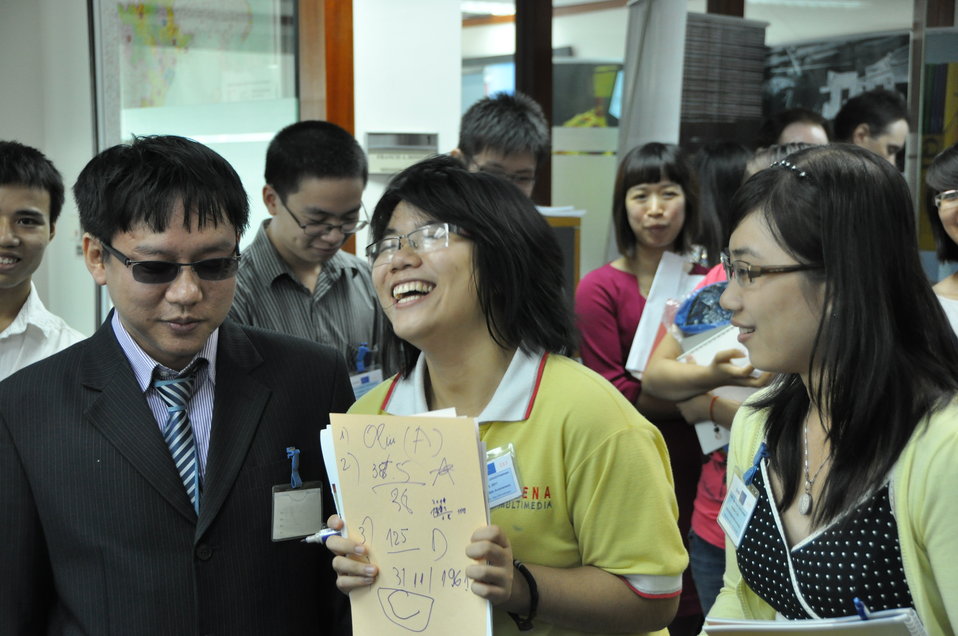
USAID 50th Anniversary Open House, USAID Vietnam